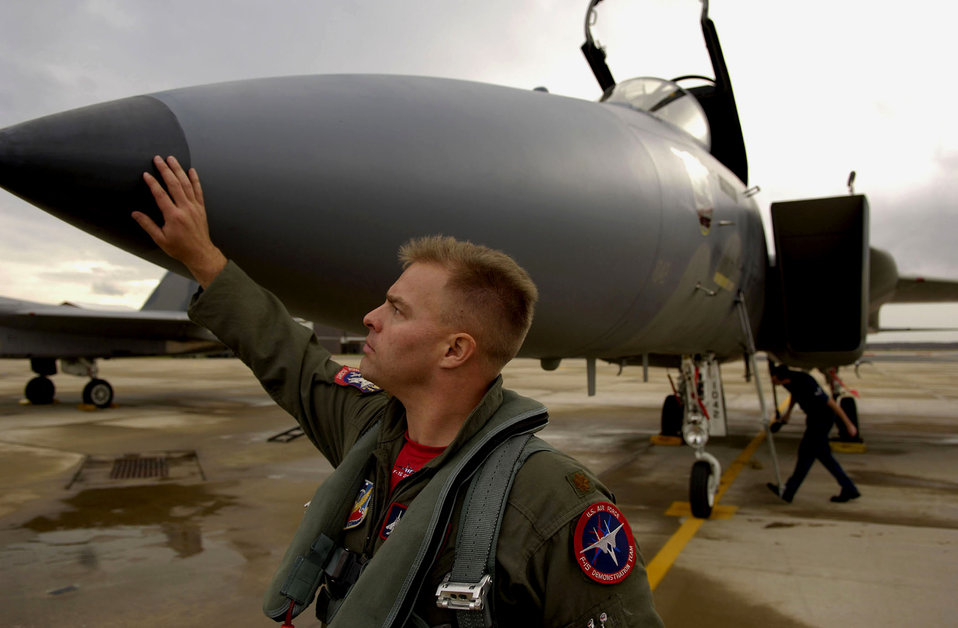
F-15 demo team transitions to F-22 demo team

Maj. Jason Costello does a preflight inspection of his F-15 Eagle before the F-15/F-22 Raptor Passing of the Torch Ceremony Dec. 1 at Langley Air Force Base, Va. The Passing of the Torch Ceremony showcased the end of an era for the F-15 East Coast Demo Team and the beginning of the F-22 leading the way in aerial fighter demonstration. Major Costello is the last F-15 East Coast Demo pilot.